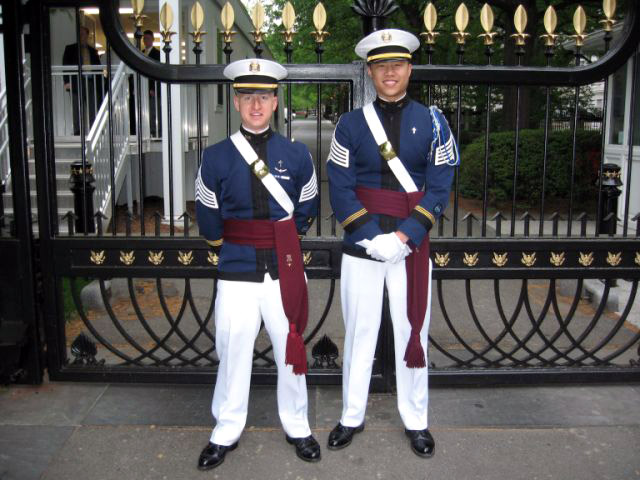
Virginia Tech cadets participate in National Day of Prayer

Virginia Tech Cadets James Compton (left) and Houston Yu stand at the visitor's gate of the White House May 3 in Washington, D.C. Cadet Yu, the regimental chaplain, and Cadet Compton, the chaplain for the highty-tighties, were invited guests of the National Day of Prayer. Cadet Yu was one of five speakers at the ceremony. He met President George W. Bush before the ceremony, and read the National Prayer just before the president spoke. The two are Air Force ROTC cadets.